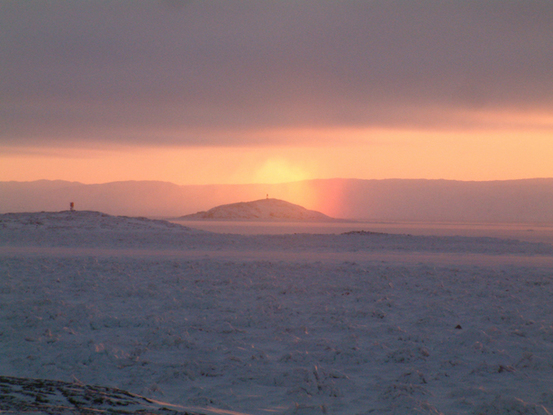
Frobisher Bay Dec 2005. Kent Driscoll Photo. Kentofthenorth@hotmail.com